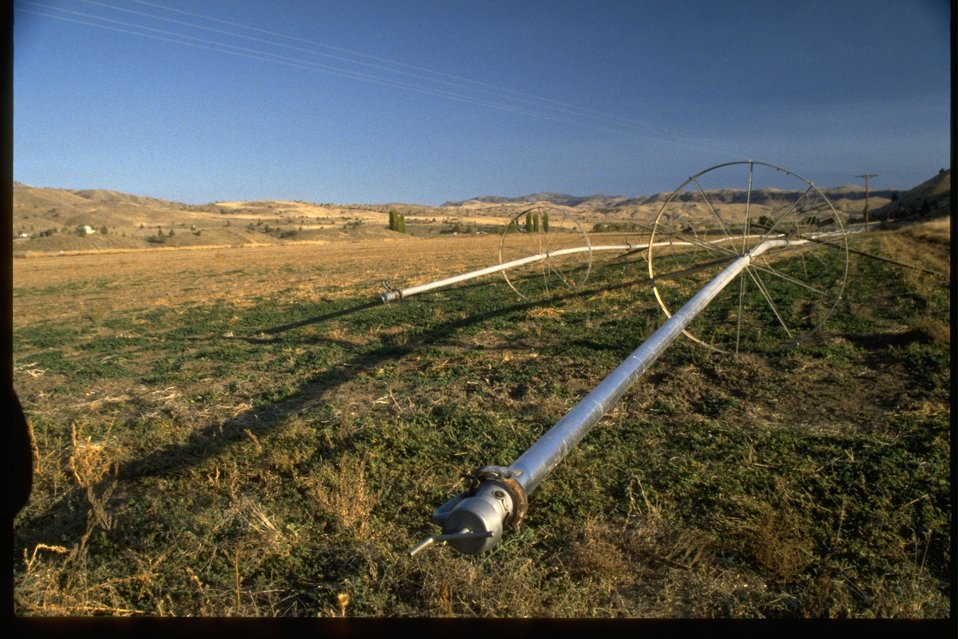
Clarno BLM agriculture field with irrigation sprinkler along the John Day River.